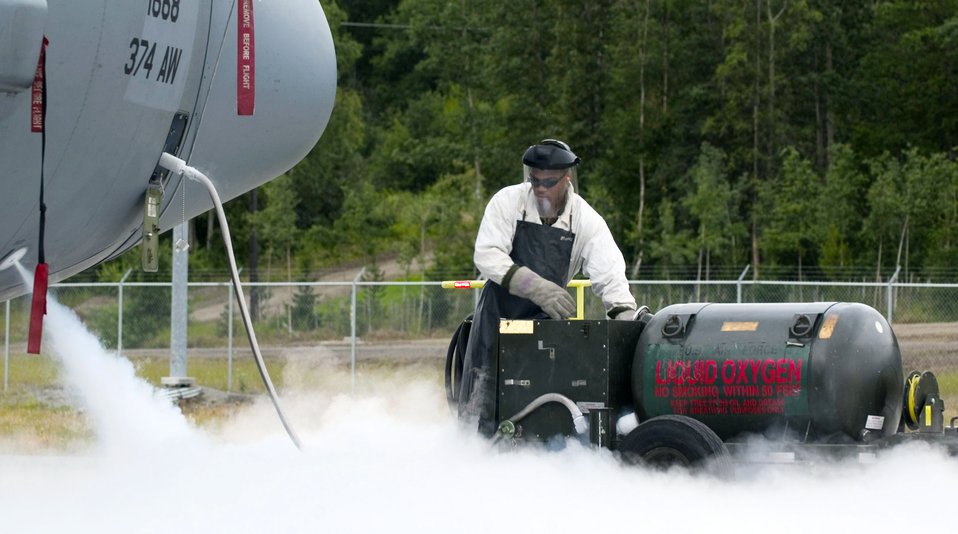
Exercise strengthens U.S., international combat skills

Senior Airman Sherman Roberts loads liquid oxygen into a C-130 Hercules at Elmendorf Air Force Base, Alaska, on July 25. Airman Roberts is with the 36th Aircraft Maintenance Unit at Yokota Air Base, Japan. The Yokota C-130s are in Alaska participating in the Pacific Air Forces exercise Cooperative Cope Thunder.